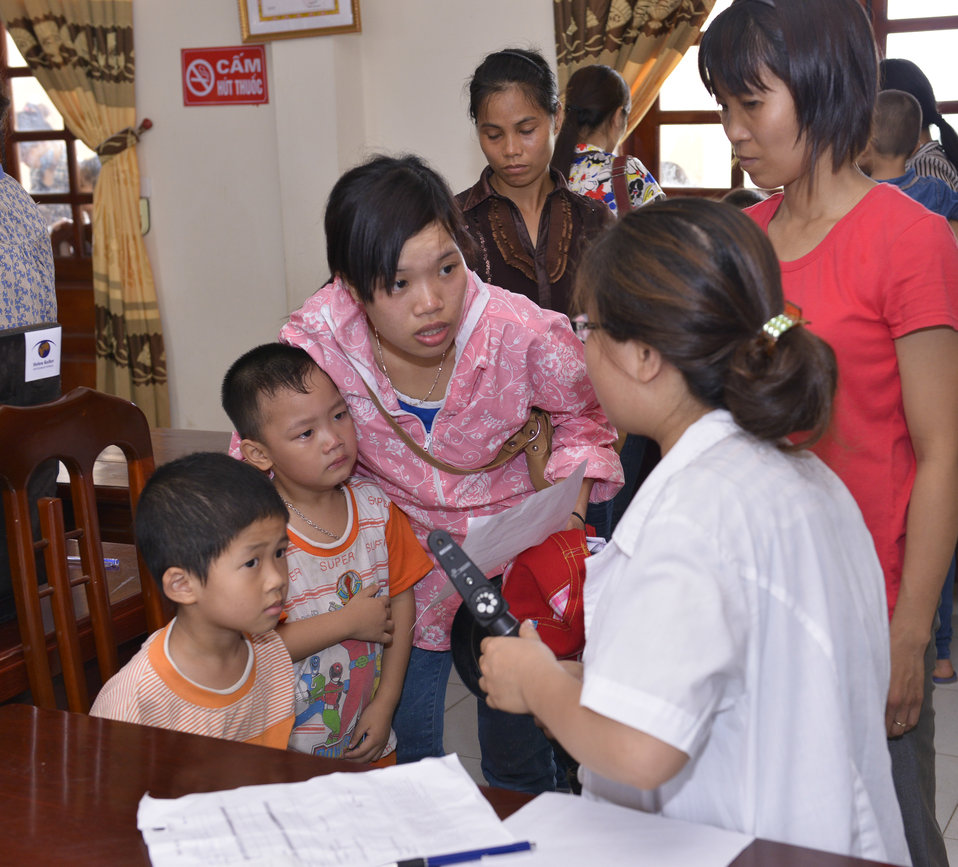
Eye screening for kindergarten children in Quoc Oai district of Hanoi

Quoc Oai, Hanoi. May 31, 2014.